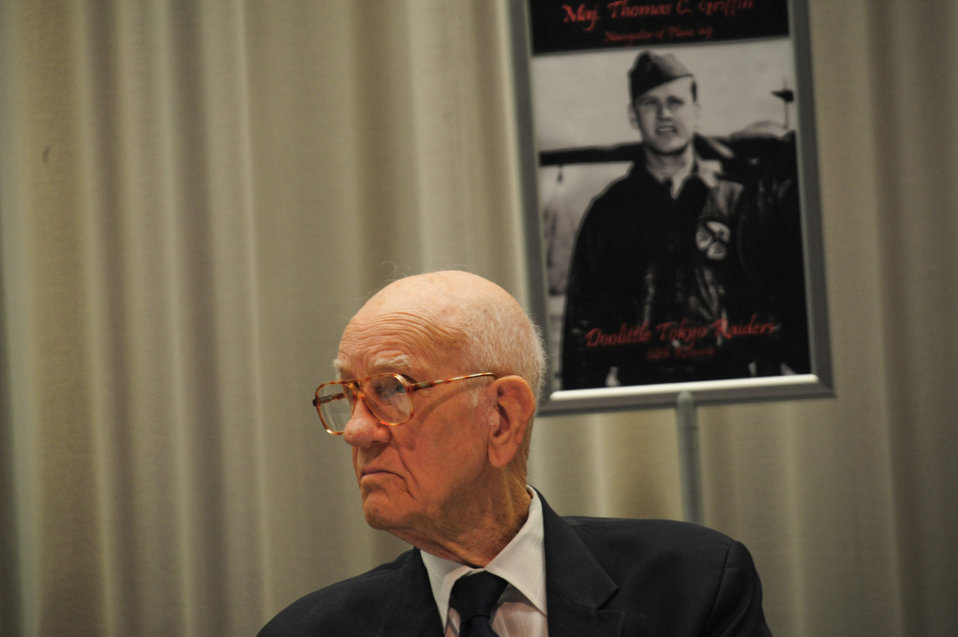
68th Doolittle Raiders Reunion

U.S. Air Force Maj. (ret.) Thomas C. Griffin, navigator of the ninth B-25 Mitchell Bomber that took part in the Doolittle Tokyo Raid, attends a press event at the National Museum of the U.S. Air Force at Wright Patterson Air Force Base, Ohio, April 16, 2010. The Doolittle Raiders' 68th reunion commemorates the anniversary of the Doolittle Tokyo Raid on April 18th, 1942, when U.S. Army Air Forces Lt. Col. Jimmy Doolittle's squad of 16 B-25s bombed targets in response to the Japanese attack on Pearl Harbor.